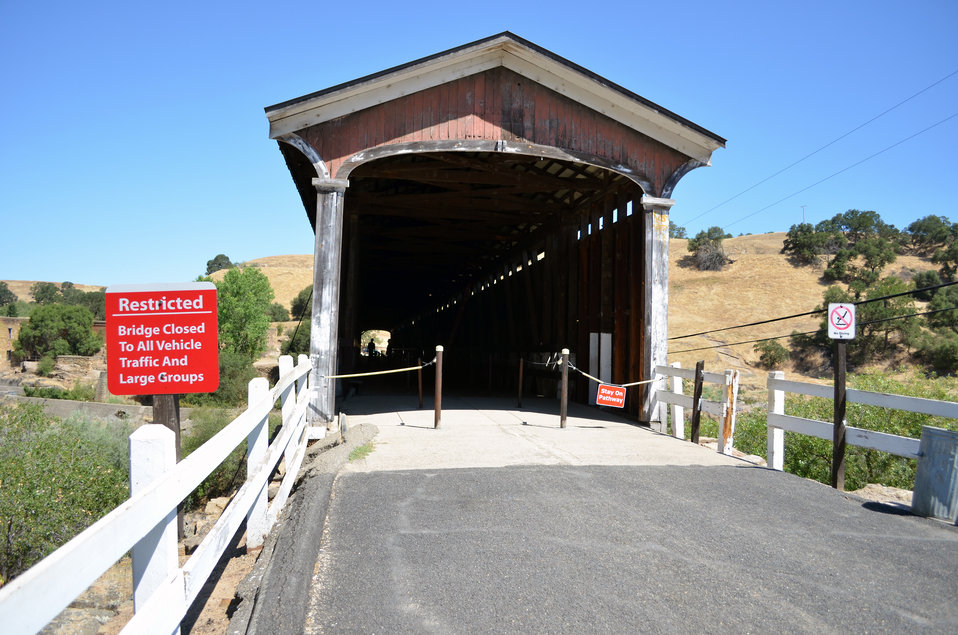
Corps to restore historic Knights Ferry Covered Bridge

The entrance to the Knights Ferry Covered Bridge at Stanislaus River Parks near Oakdale, Calif., shown July 2, 2012. Engineers with the U.S. Army Corps of Engineers Sacramento District inspected the historic bridge and are working on a design, due in October, to fix minor structural issues. The bridge was approved for inclusion as a historic landmark in the Library of Congress 2012.